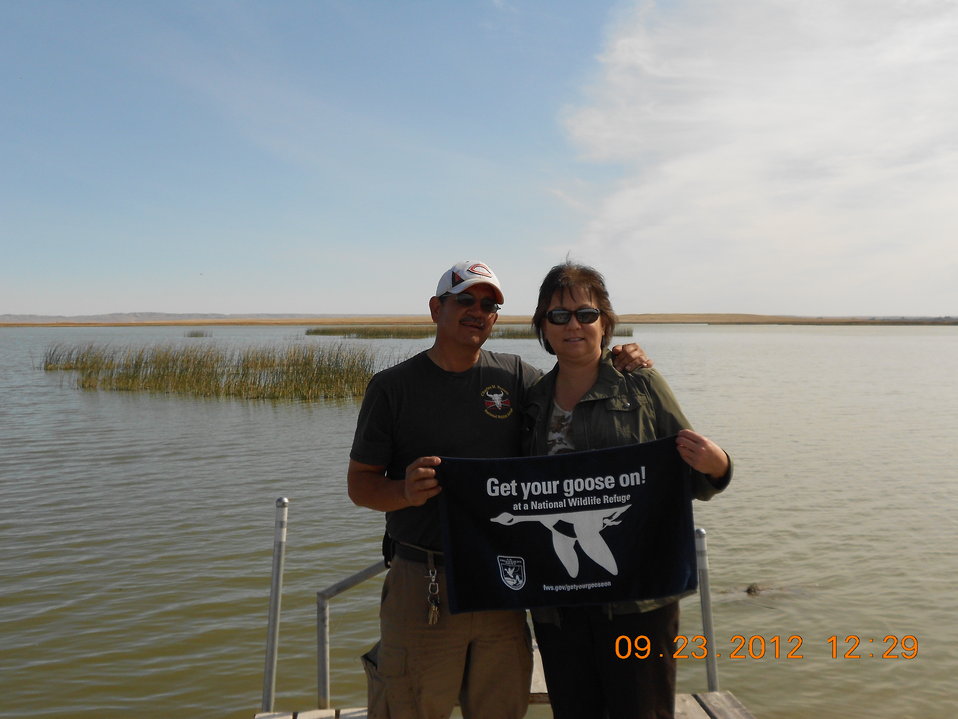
Hopkins Family Gets Their Goose On!

Taken at Bowdoin NWR